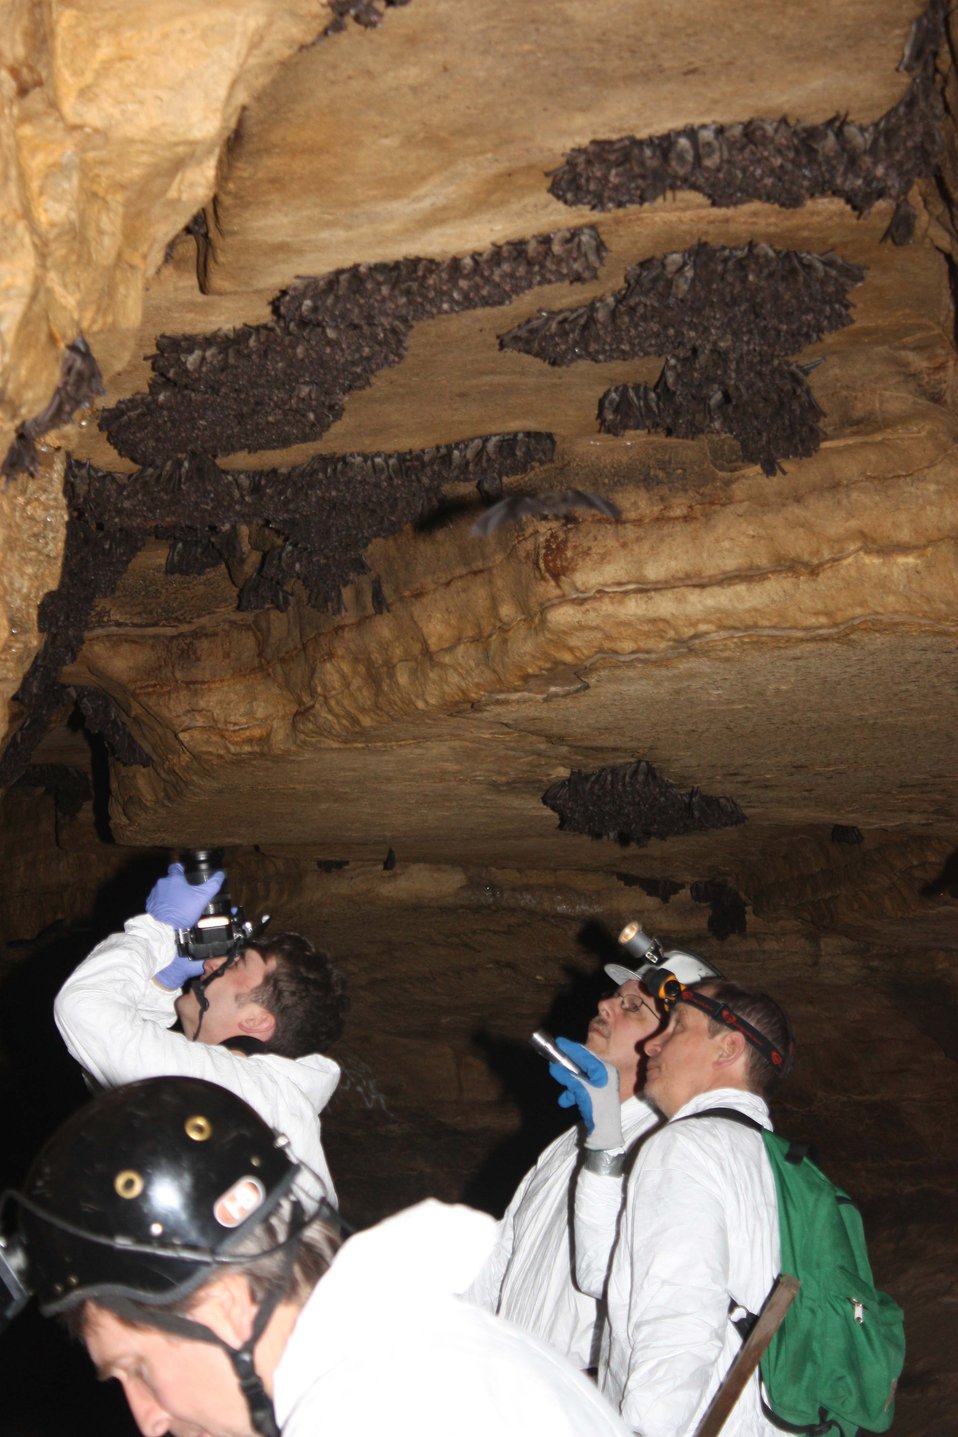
2011 Indiana bat survey

Credit: USFWS; Andrew King

To estimate numbers of hibernating bats, researchers take digital photos of the bat clusters. Back in the office, the number of bats in the photos are counted.